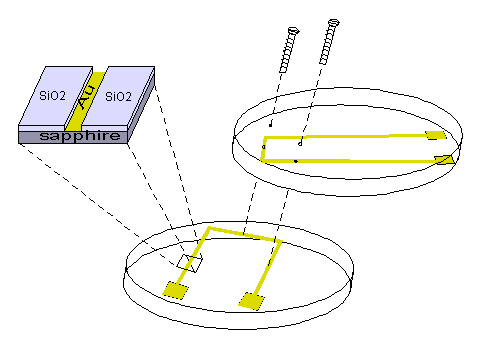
Electrical arcs; micrometer scale

Measuring Electrical Arcs At the Micrometer Scale